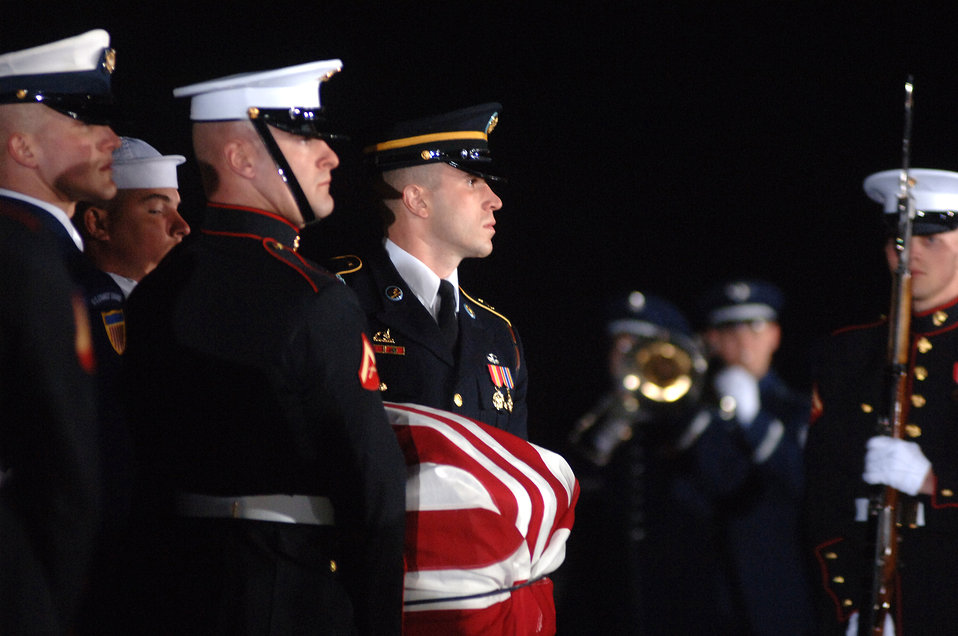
Ford's body arrives in Washington

The casket of Gerald R. Ford is carried by the Ceremonial Honor Guard at Andrews Air Force Base, Md., as part of the national farewell funeral procession honoring the former commander in chief. President Ford will lie in state at the Capitol Rotunda where the public will be able to pay their respects. The funeral will be held at the Washington National Cathedral Jan 2. His final resting place will be in his hometown of Grand Rapids, Mich., at a site just north of the Gerald R. Ford Museum.